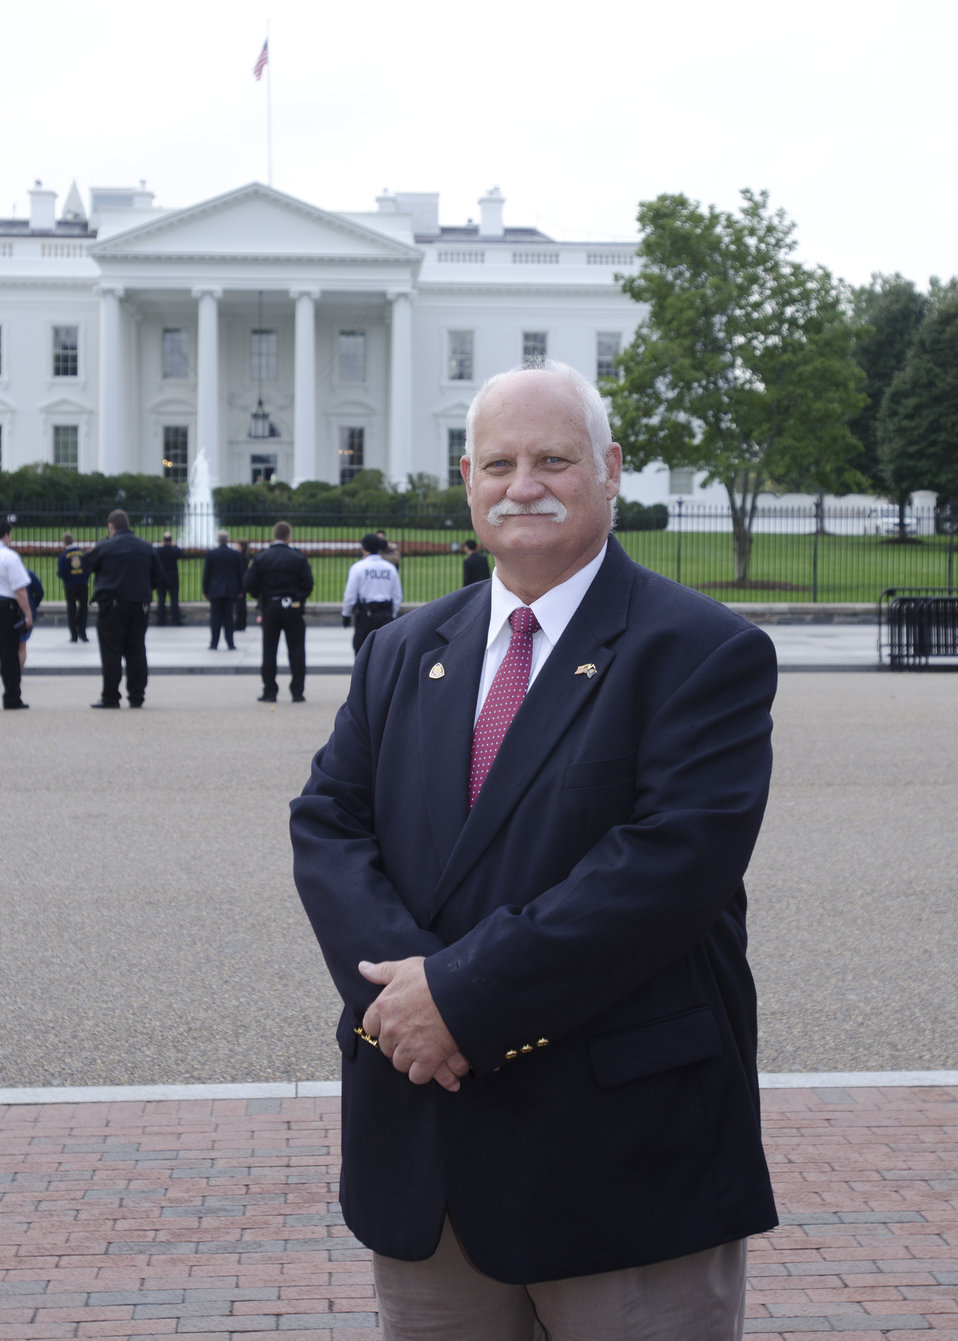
Champion of Change recipient Pete Dreisbach in front of the White House in Washington, D.C. on Tuesday, Oct. 9, 2012. Dr. Dreisbach serves as Director of the Kentucky FFA Leadership Training Center. For 25 years, Dr. Dreisbach has worked tirelessly to improve its programming and facilities while welcoming young people to the center. Each year 1,500 students attend the camp to engage in team building activities and to learn lessons they take back to their own communities.